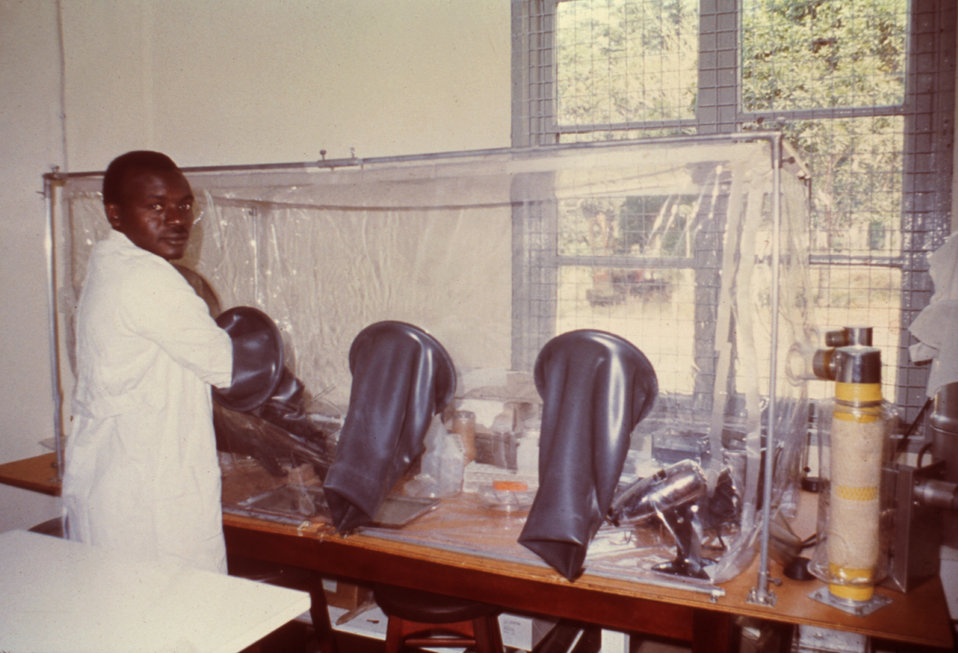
'Gabriel', a laboratory technician is seen here working in a Kenema, Sierra Leone lab during a Lassa fever investigation.